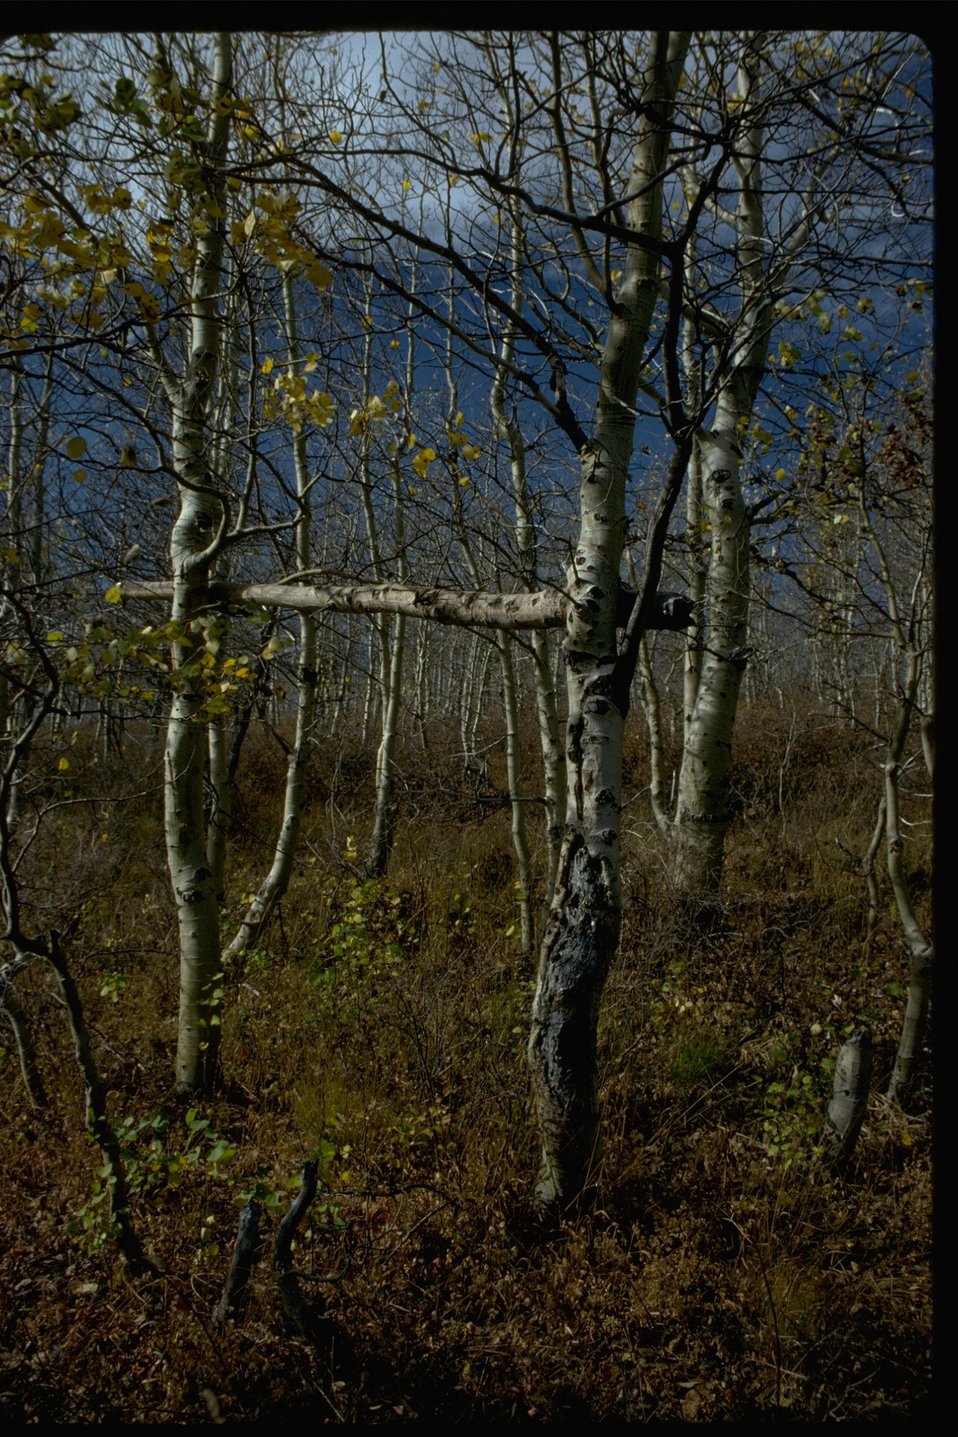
A pole for hanging deer at the deer hunter's camp in the Steens area.